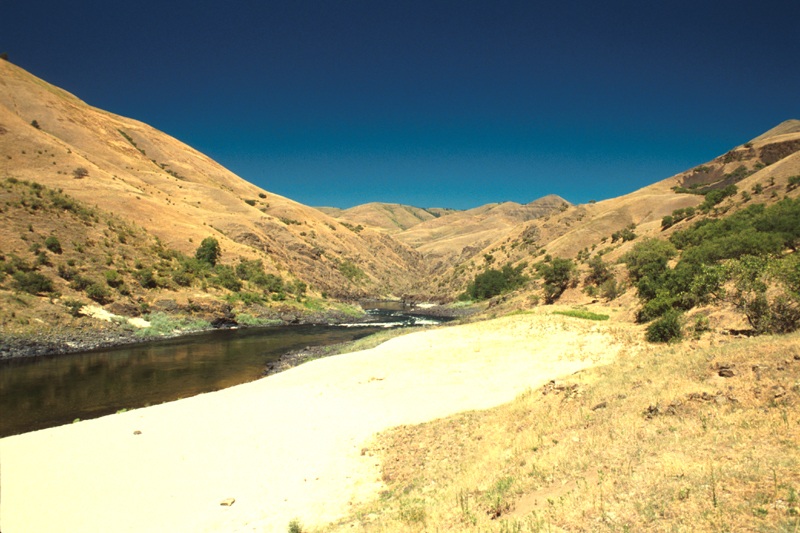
Cottonwood Field Office UCSC Upper Columbia Salmon Clearwater District